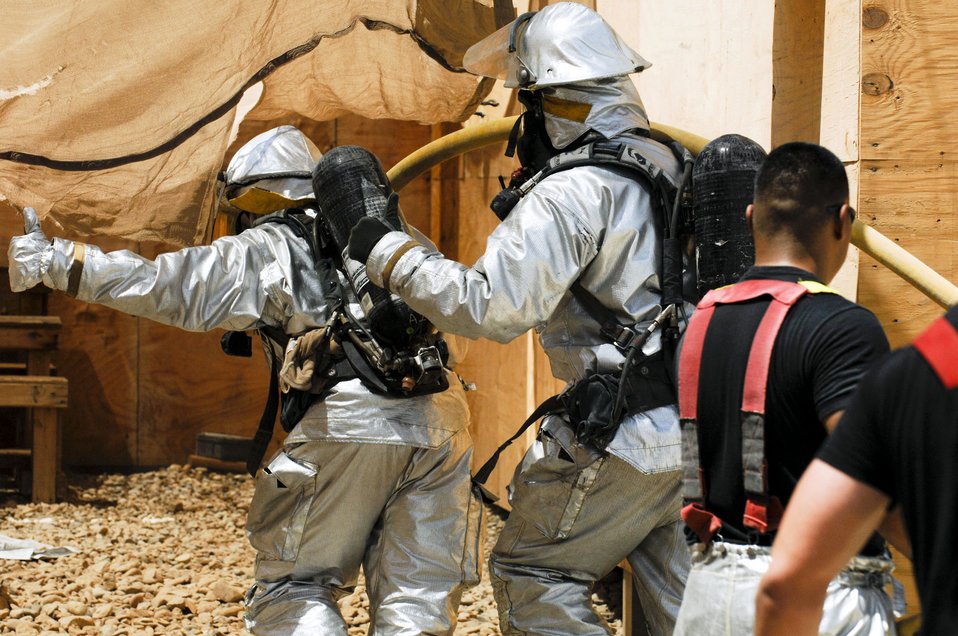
Fire fight in Iraq for the Army

Firefighters head in to put out a blaze in the Army Motor Pool June 19 on Camp Adder, Iraq. Due to munitions contained in the building and no potential for loss of life the firefighters switched to defensive operations for the blaze using six trucks to keep it under control and confined to the building. The firefighters are from the 407th Expeditionary Civil Engineer Squadron at Ali Air Base, Iraq.